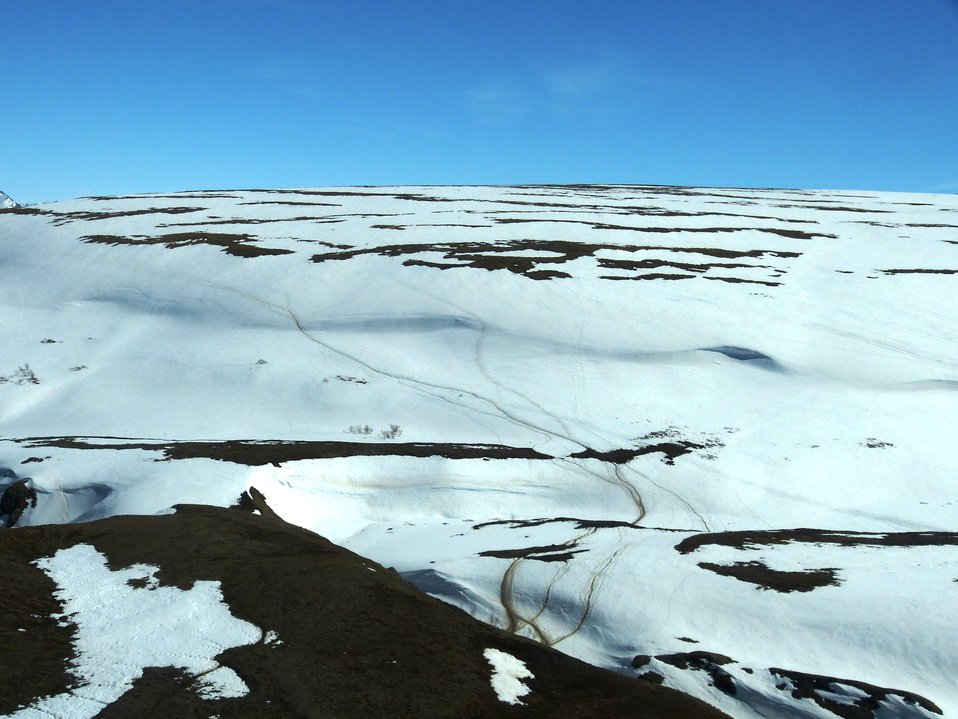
Caribou tracks in Kilbuck Mountains on Yukon Delta National Wildlife Refuge

Photo credit: Kristine Sowl
USFWS, Yukon Delta National Wildlife Refuge